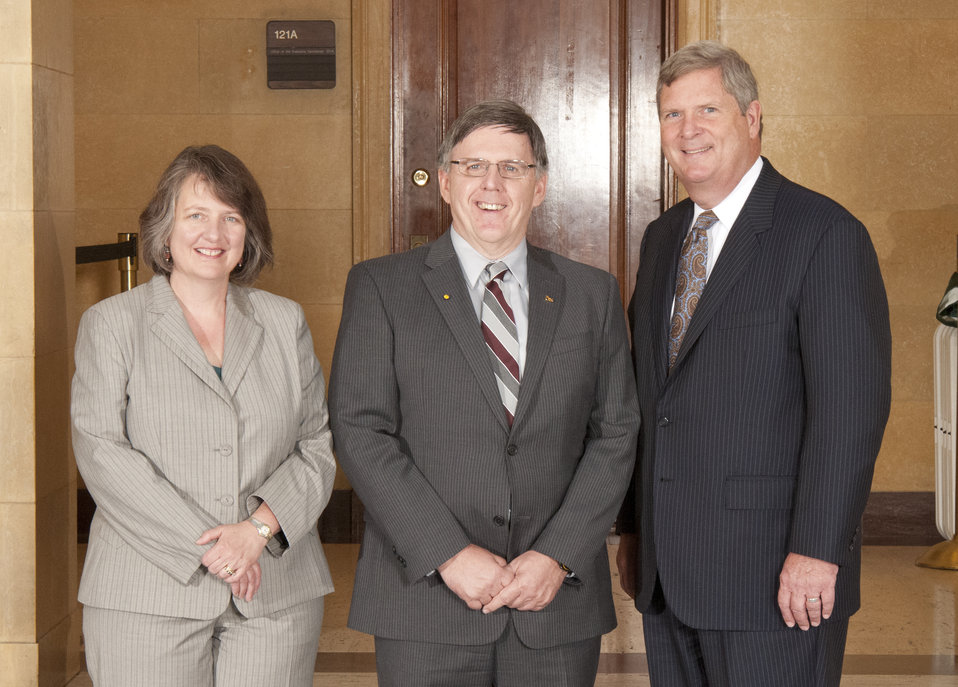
Agriculture Secretary Tom Vilsack and Deputy Agriculture Secretary Kathleen Merrigan with Donald Knowles, ARS, during the Honor Award group photography on the patio of the U.S. Department of Agriculture, in Washington, D.C., on Wednesday, September 12, 2012.